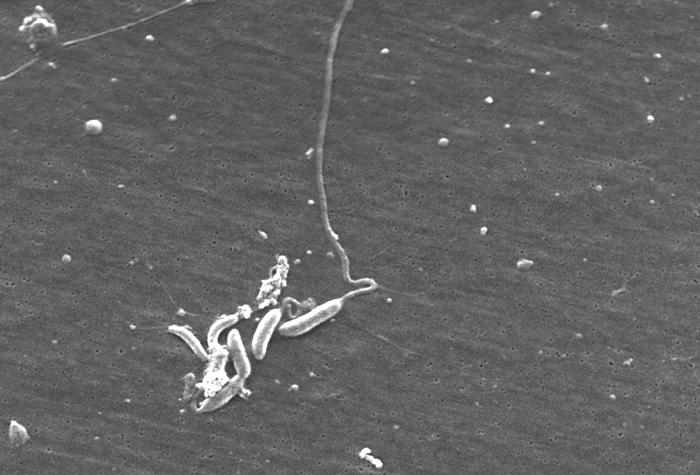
This scanning electron micrograph (SEM) of an untreated water specimen extracted from a wild stream mainly used to control flooding during inclement weather, revealed the presence of unidentified organisms, which included bacteria, protozoa, and algae. In this particular image, a number of flagellated microorganisms were grouped together with other steam water particulates.